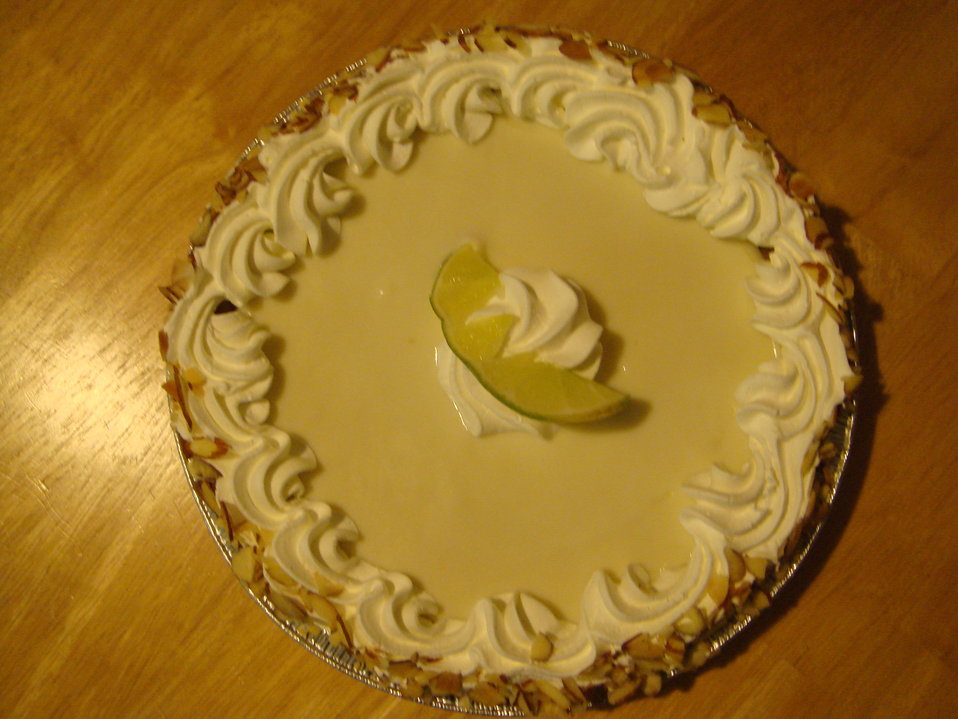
no original description